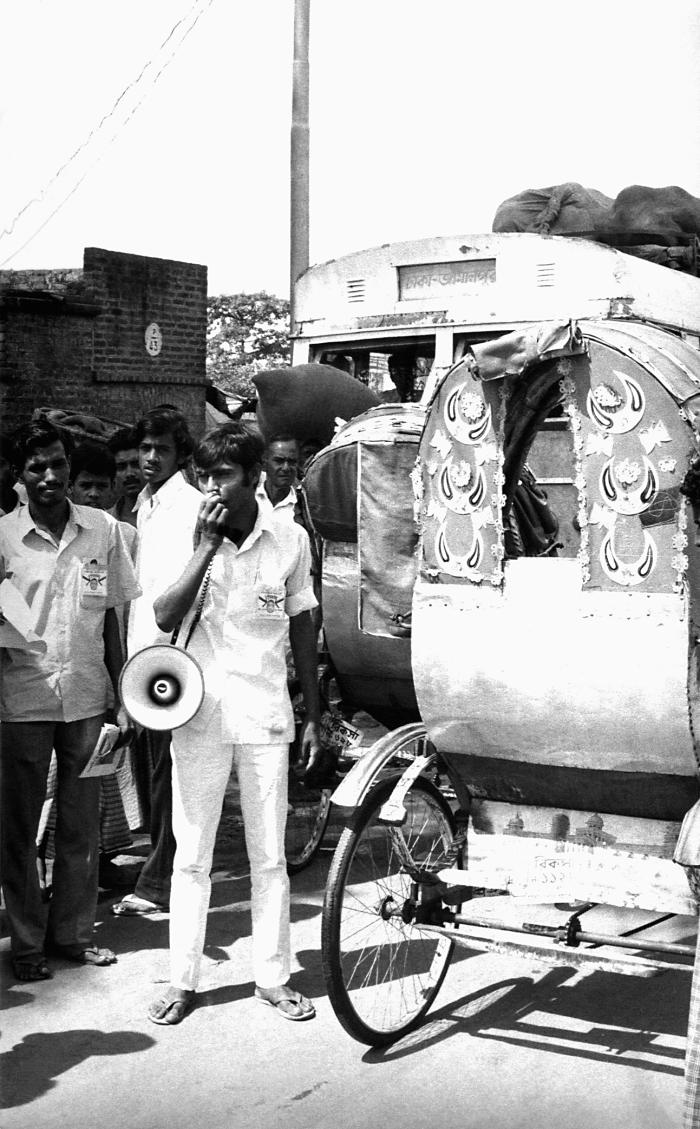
Microphone in hand, this local Bangladesh smallpox eradication team volunteer, was photographed as he was announcing the reward that was made available to those who'd report any smallpox cases. If, indeed, a case was reported, from no matter the source, it was investigated fully, and if confirmed as a smallpox case by an epidemiologist, a reward was paid to the informant, no matter the age, and it was subsequently entered into the 'Containment Book'. The Containment Book was a ledger, which recorded all of the names of anyone living in, or within one half of a mile from a smallpox case, and subsequently all those listed were vaccinated against smallpox. Those vaccinated were followed until a 'successful' vaccination was observed. Periodic surveys showed that by the end of the program, 80% of the public knew about the cash award presented to those who had informed the public health authorities of a confirmed smallpox case.